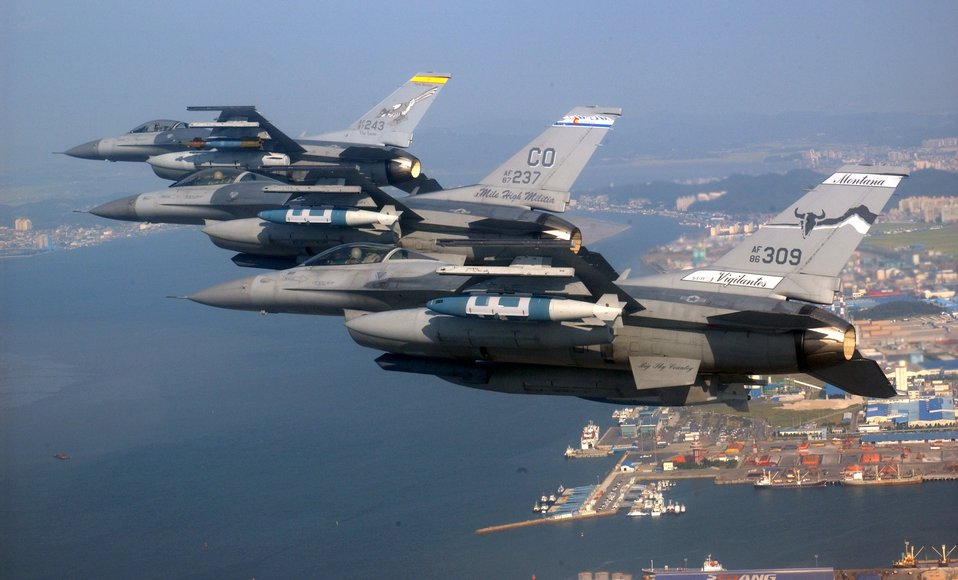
All together now

A three-ship formation of Air National Guard F-16 Fighting Falcons flies over Kunsan City, South Korea. The F-16s are from New Mexico, Colorado and Montana.